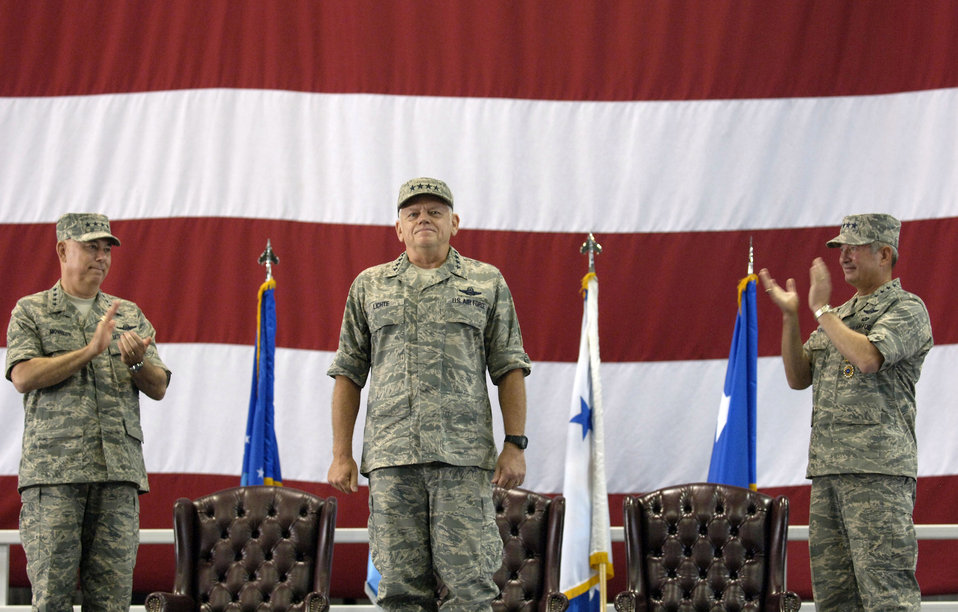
New mobility commander to continue raising the bar

Gen. Arthur J. Lichte (center) is applauded by Air Force Chief of Staff General T. Michael Moseley (left) and Gen. Duncan J. McNabb, as he assumes command of Air Mobility Command Sept. 7 at Scott Air Force Base, Ill.